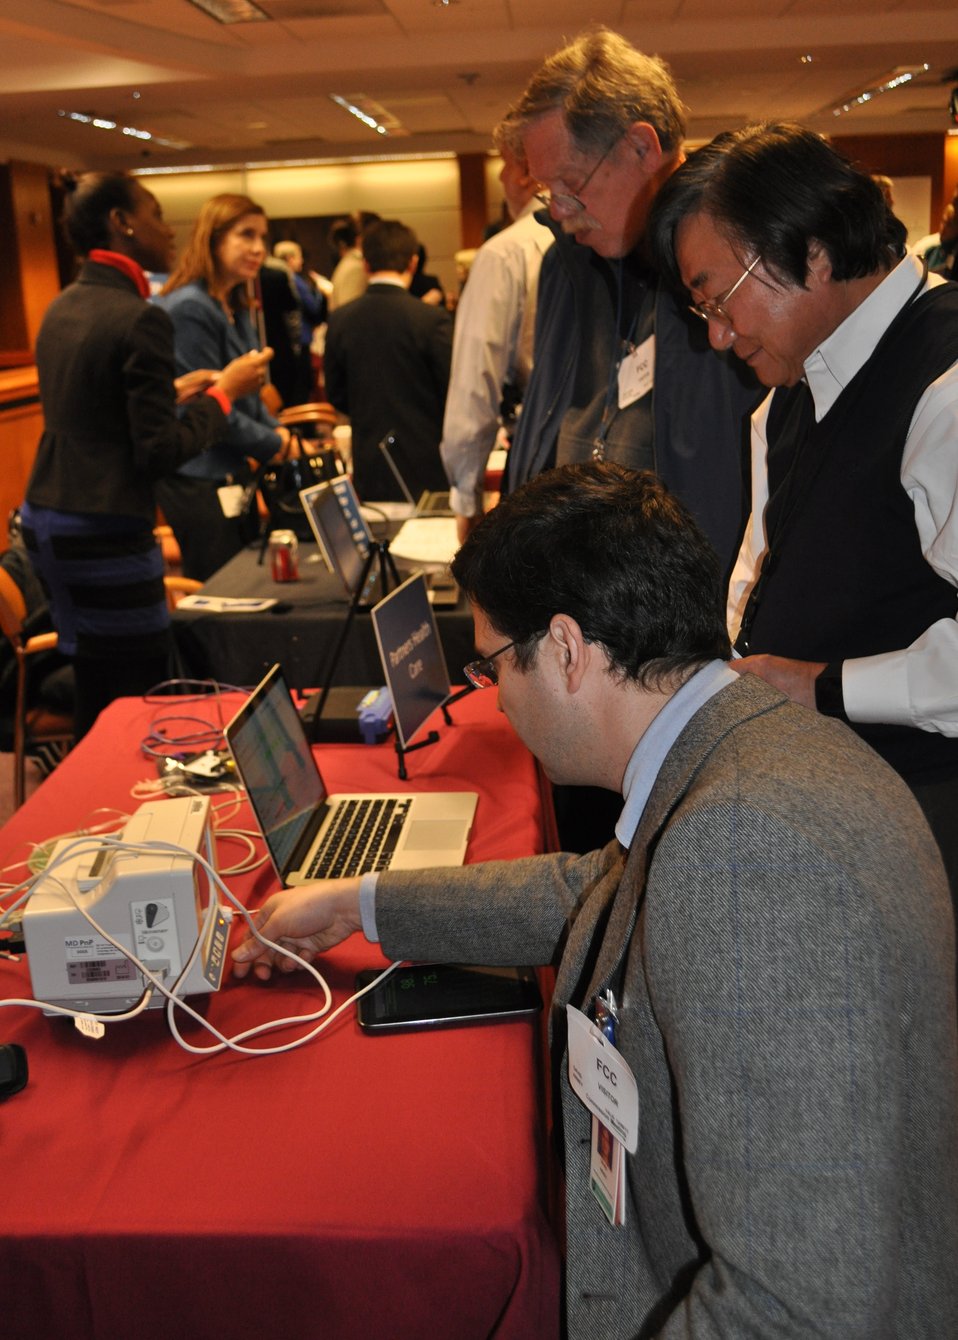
12.6.13 mHealth Innovation Expo

FCC mHealth Innovation Expo.